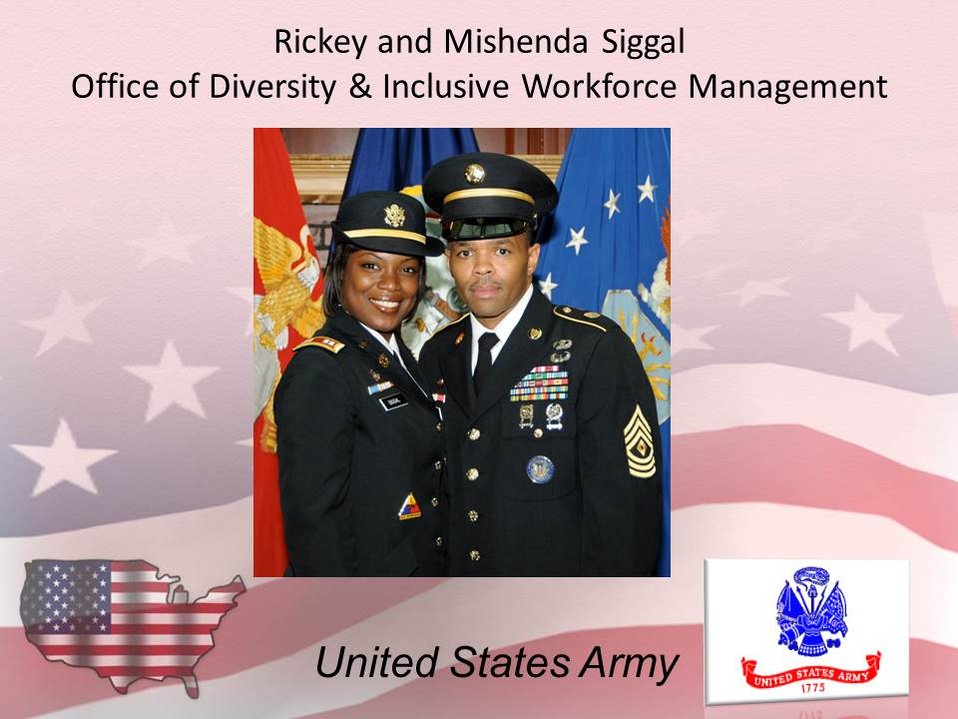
Rickey and Mishenda Siggal